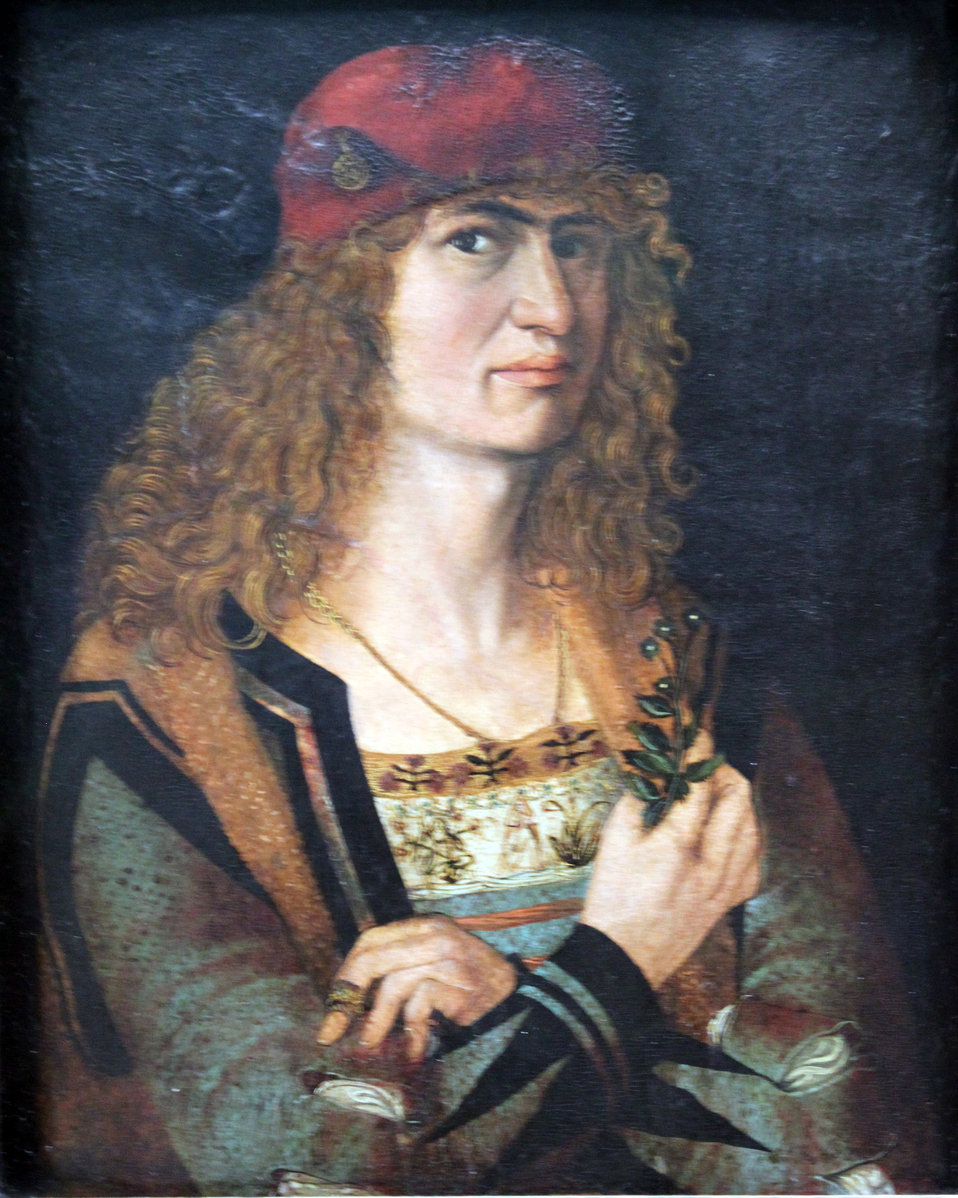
1498 Elsner Bildnis eines Braeutigams anagoria